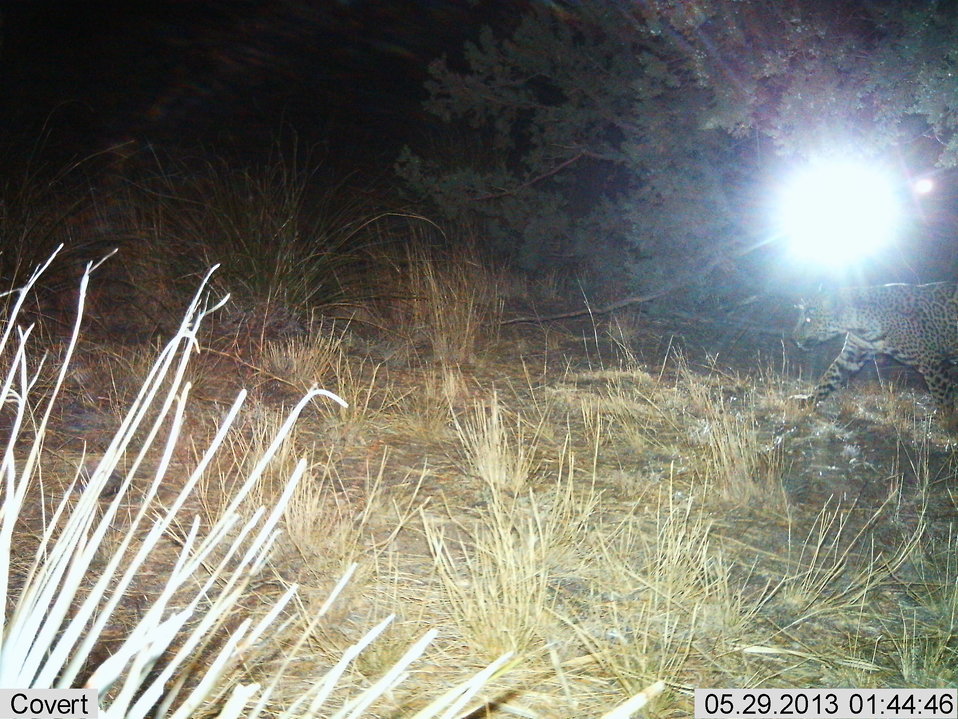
Male jaguar photographed by automatic wildlife cameras in the Santa Rita Mountains on May 29, 2013, as part of a U.S. Fish and Wildlife Service/Department of Homeland Security-funded jaguar survey conducted by University of Arizona. Comparison of pelage markings with other photos confirms that this is the same jaguar that has been repeatedly photographed in the survey area in the Santa Rita Mountains. This is one of two jaguar photos taken from paired cameras (both sides of jaguar photographed) on May 29, 2013. The jaguar has been photographed several times from this location.